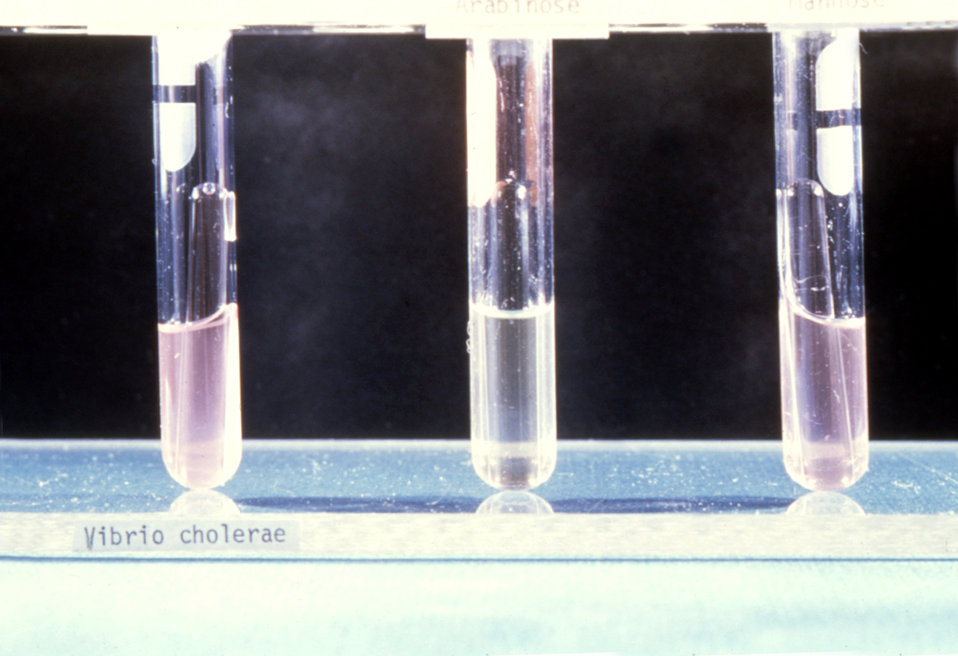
This image depicts the Heiberg Fermentation lab test used during the isolation and identification of Vibrio cholerae.